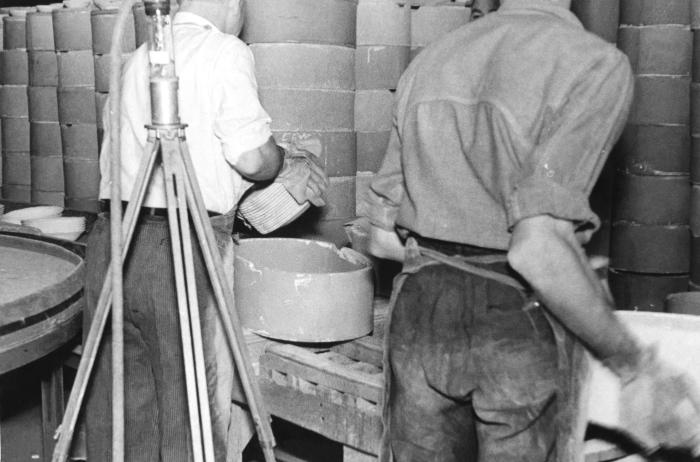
This historical image, which was provided by the Center for Disease Control's (CDC), National Institute for Occupational Safety and Health (NIOSH), depicted two male industrial workers who were inside a West Virginia ceramics factory, seen here working with 'greenware' plates, which is clay that has yet to be fired, or hardened to a bisque state. Note the tripod in the foreground, upon which was placed an impinger, which was measuring the dust concentration in the air. Workers should have taken precautions against the possibility of inhaling airborne particulates, which would lead to the chronic pulmonary disease known as pneumoconiosis, or silicosis, or more commonly known as 'grinders' disease', characterized by the formation of nodular fibrotic changes in the lungs. Note that these men were not wearing a filtered breathing mask, increasing their chances of contracting silicosis. The image was published in the 'Public Health Bulletin', No. 244, 1939.